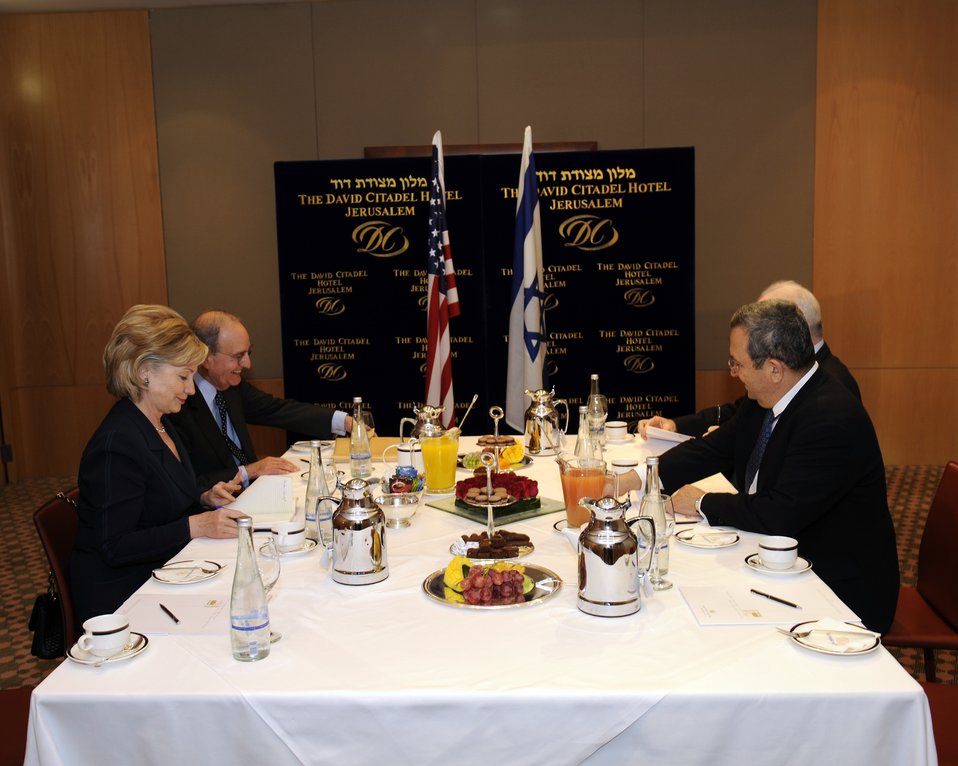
Secretary Clinton Meets With Israeli Minister of Defense

U.S. Secretary of State Hillary Rodham Clinton and U.S. Special Envoy to the Middle East George J. Mitchell meet with Israeli Minister of Defense Ehud Barak in Jerusalem October 31, 2009.